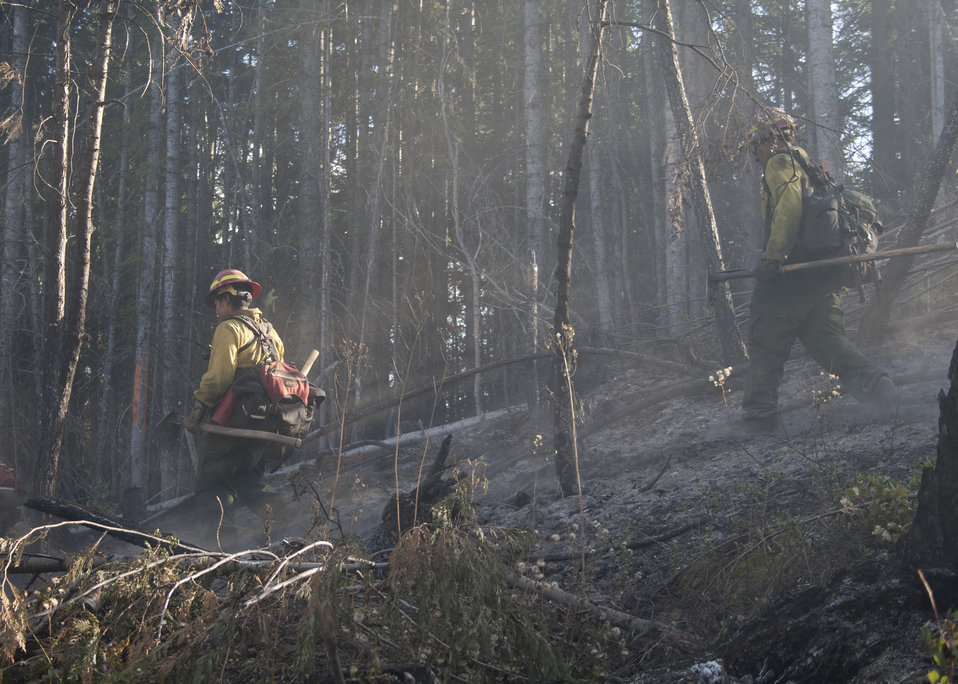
Firefighters supported by three fire engines, two helicopters, two water tenders, a dozer and an air tanker battled to contain the 90 acre Rogers Fire located on Mt. Rogers five miles west of Aladdin, WA on the Colville National Forest. Firefighters worked under adverse conditions with steep terrain and gusting winds to reduce the loss of timber and protect the Rogers Mountain Trail. The Rogers Fire began on Aug. 9, 2011 and was controlled by Aug. 19, 2011 with mop up crews ensuring that no flare-ups occurred. Colville National Forest has 1.1 million acres in northeastern Washington and includes the Kettle River, Selkirk Mountain ranges, and the upper reaches of the Columbia River.